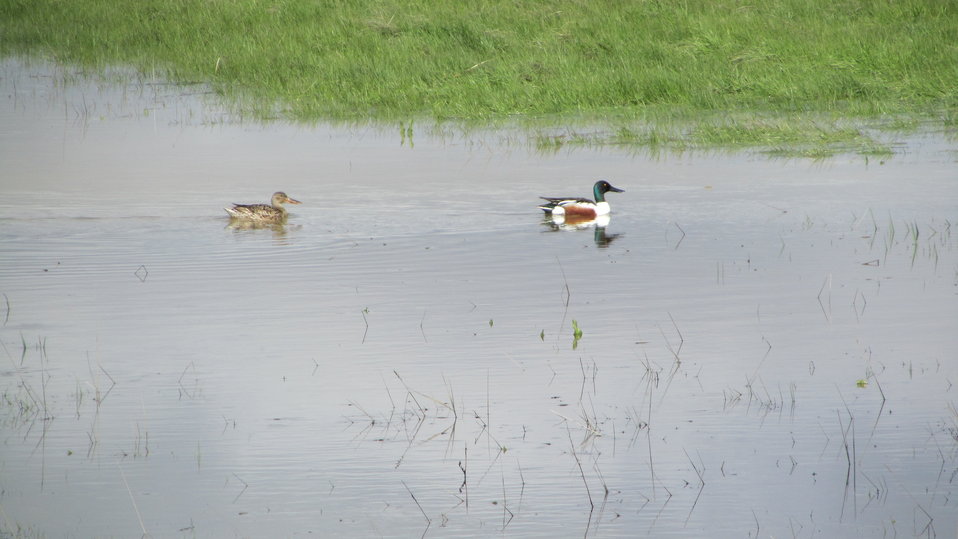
Northern Shoveler Hen and Drake

The lands of the refuge were established to protect and provide habitat for migratory birds that cross State lines and international borders and are by law a Federal trust responsibility.
The refuge is of great value to waterfowl and shorebirds, as well as other migrating water-dependent bird species, because of the diversity of wetland and upland habitats that provide for the diverse life cycle needs of these species.